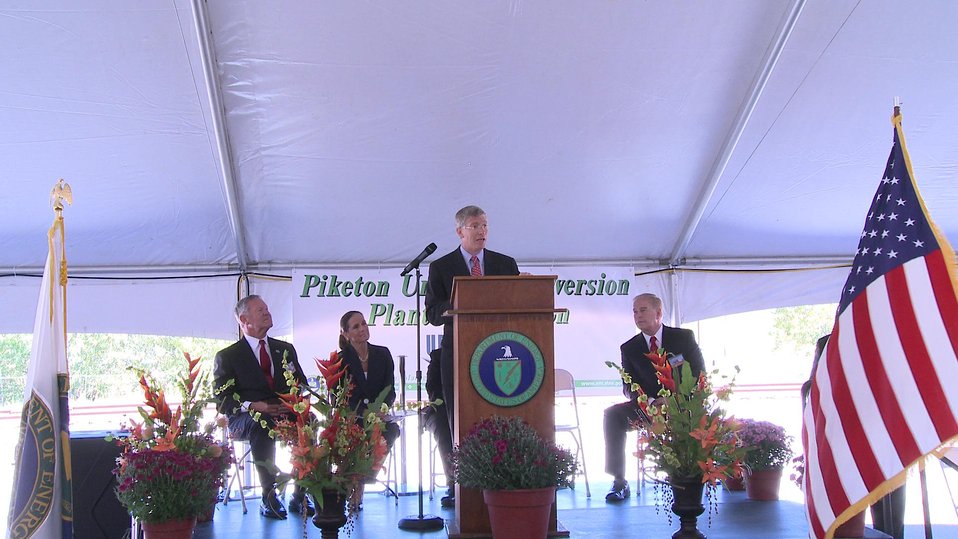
Deputy Secretary Poneman speaks September 9 at a ceremony commemorating the start-up of the hot functional testing operations at the Depleted Uranium Hexafluoride Conversion Plant in Piketon, Ohio. Seated to the left are Congressman Charlie Wilson (Ohio’s Sixth District) and Congresswoman Jean Schmidt (Ohio’s Second District) and to the right is Ohio Governor Ted Strickland, who also spoke during the ceremony.